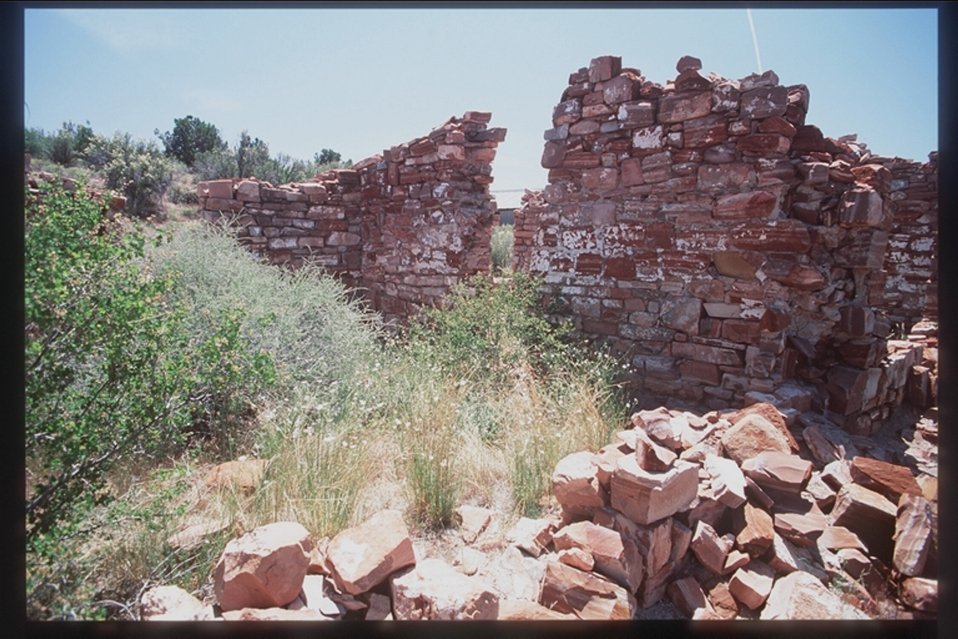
A long-abandoned structure in the Grand Canyon-Parashant National Monument Area.